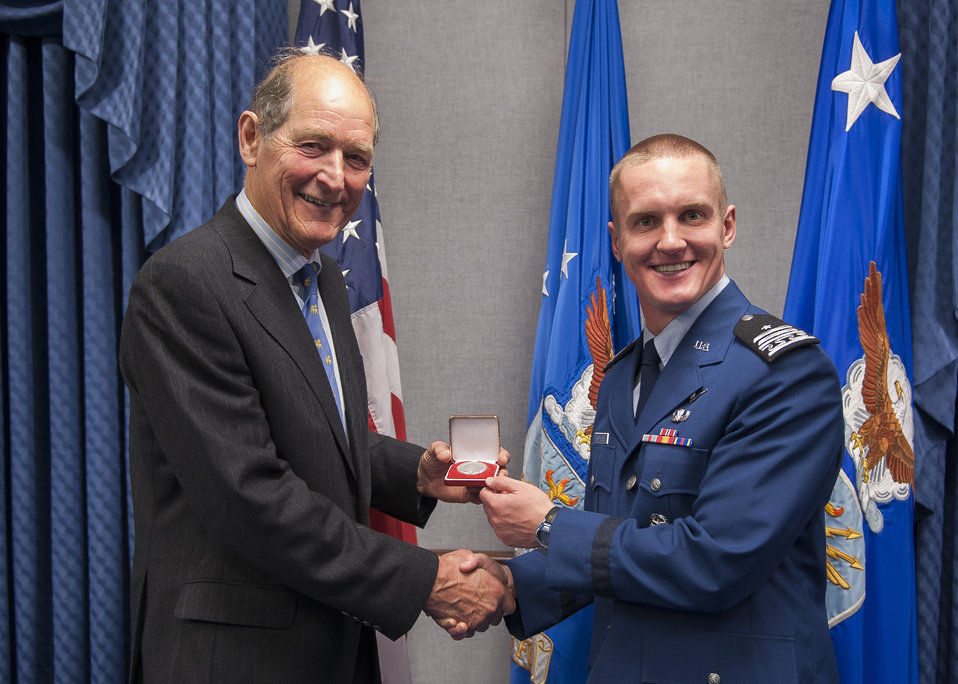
USAFA cadet honored as Cadet of the Year

Air Force Academy Cadet 1st Class Dustin Hayhurst (right) receives a coin from David Cyster May 10, 2012, during a ceremony in the Pentagon in Washington, D.C. The coin symbolizes Hayhurst being presented with the Millennium Sword of Friendship in honor of his being named the 2011 Cadet of the Year. Hayhurst earned the award by demonstrating excellence in military skills, academics and athletics in an Air Force commissioning program. Cyster is a member of The Air Squadron of the United Kingdom.